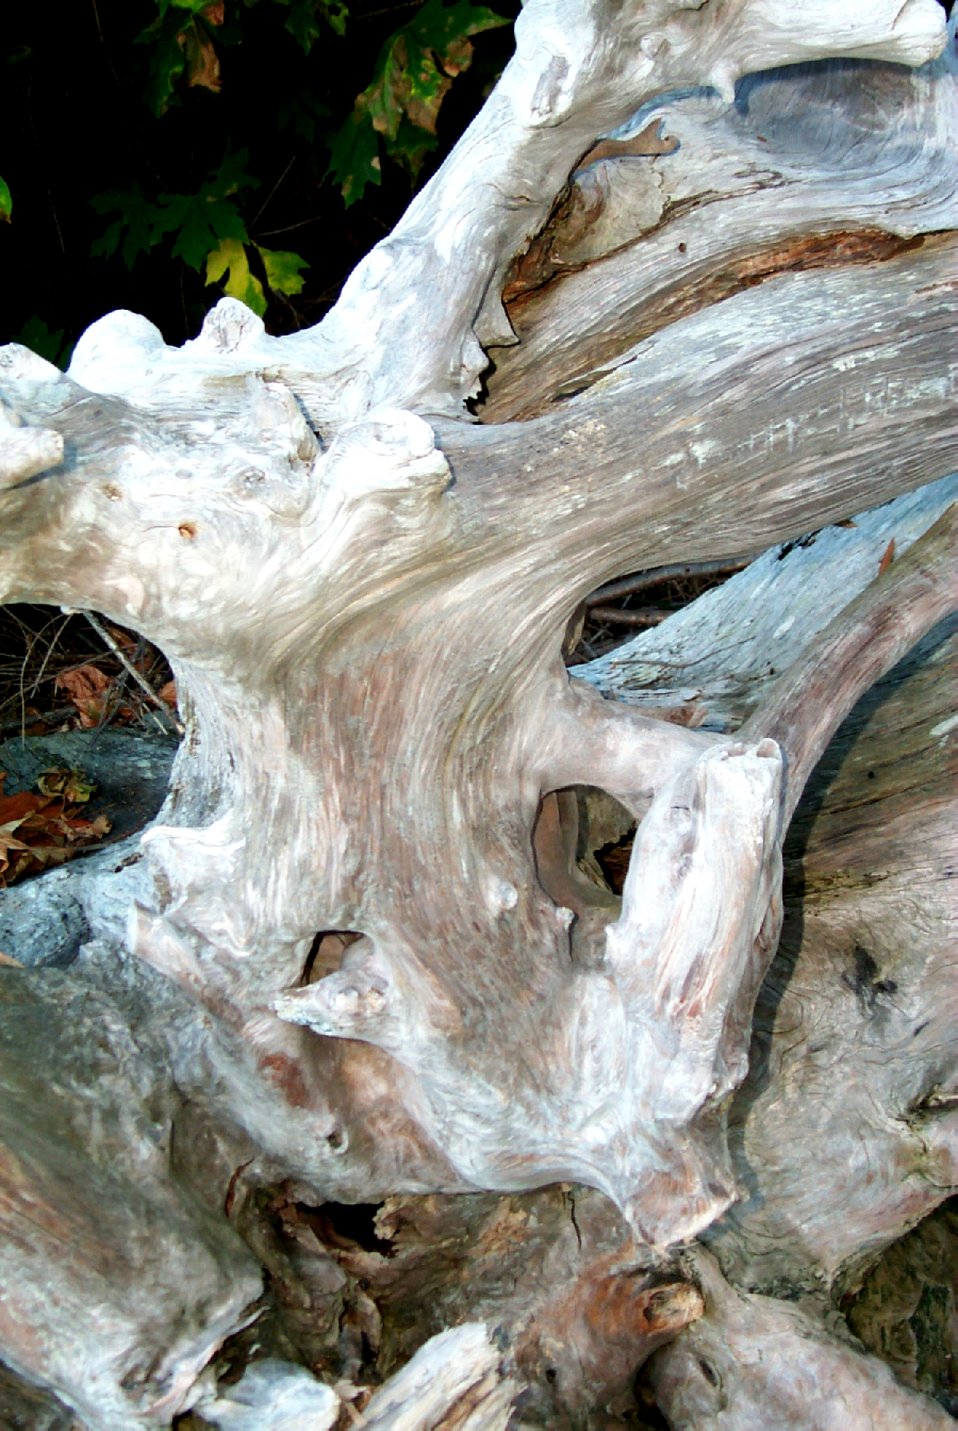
Driftwood at Gig Harbor.